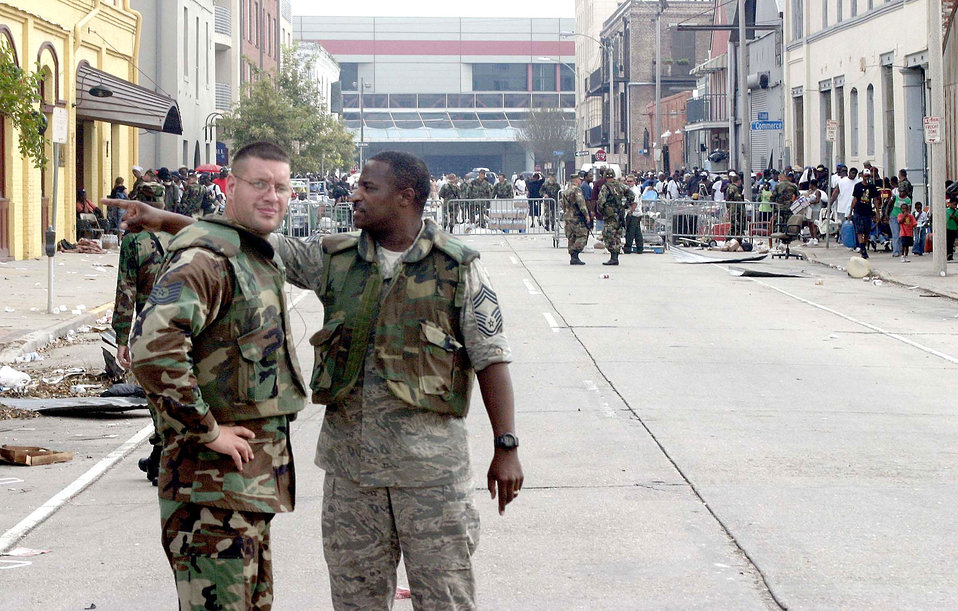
Fuels team assists in hurricane recovery efforts

NEW ORLEANS --- Tech. Sgt. Lee Meyers (left) and Chief Master Sgt. Gregory Nabors discuss refeuling operations here. A fuels team from Barksdale Air Force Base, La., deployed here to assist with refueling operations in the city, to include refueling generators and stranded vehicles. Sergeant Childress and Chief Nabors are assigned to the 2nd Logistics Readiness Squadron at Barksdale.